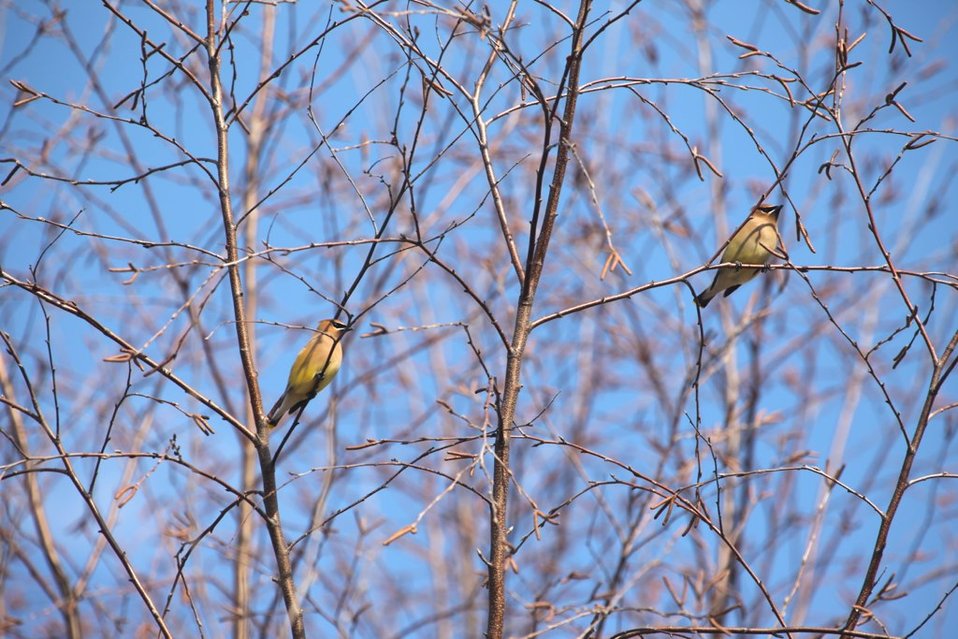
Photo of the Week- Cedar Waxwing

Photo of the week 3/9/12

Reports of cedar and bohemian waxwings brought many from the birding community to the northeast regional office in Hadley, Massachusetts the week of March 5-9. Here two cedar waxwings sit on a tree just outside of the regional office.